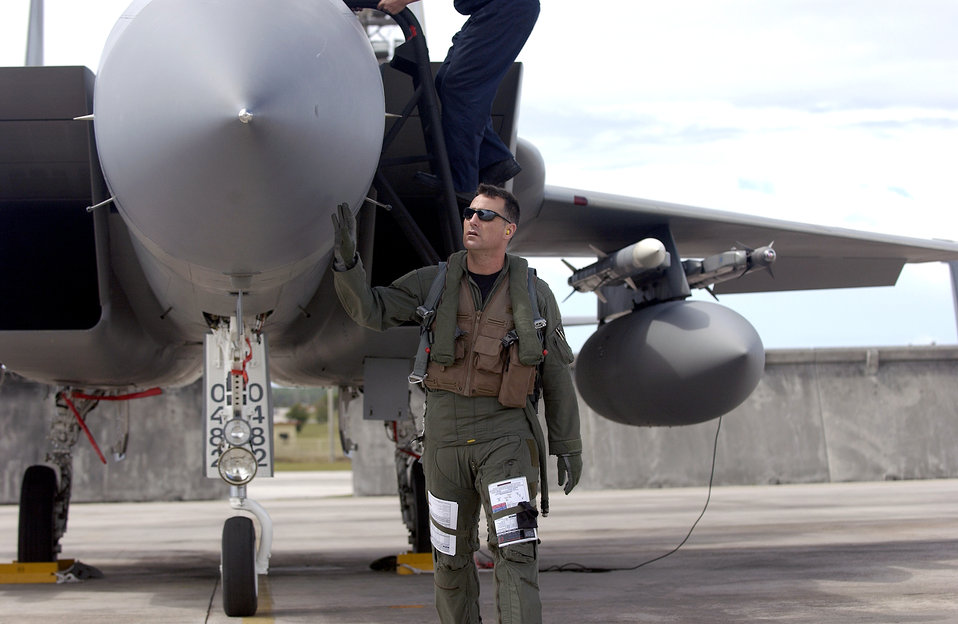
Joint training at Valiant Shield

Maj. Paul Johnson performs a pre-flight inspection on an F-15 Eagle before a training sortie at Andersen Air Force Base, Guam, on Thursday, June 22, for Valiant Shield 2006. The exercise, which concludes June 23, focuses on integrated joint training in a variety of mission scenarios. Major Johnson is assigned to the 44th Fighter Squadron at Kadena Air Base, Japan.